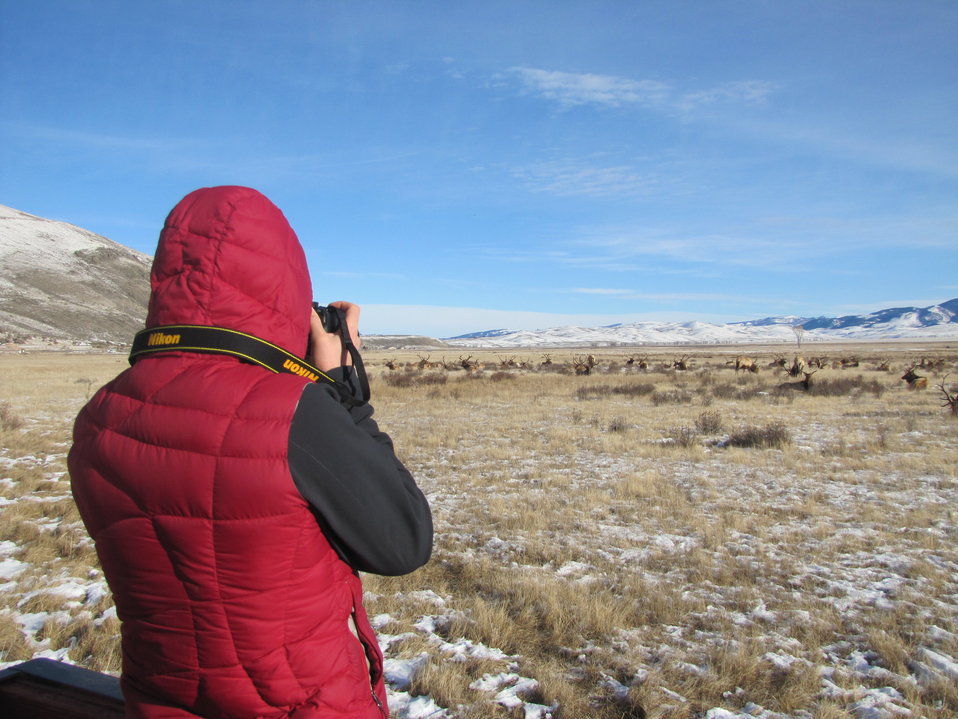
Capturing a Memory

Many visitors bring cameras on their National Elk Refuge sleigh ride to capture images from the unique wildlife viewing experience.